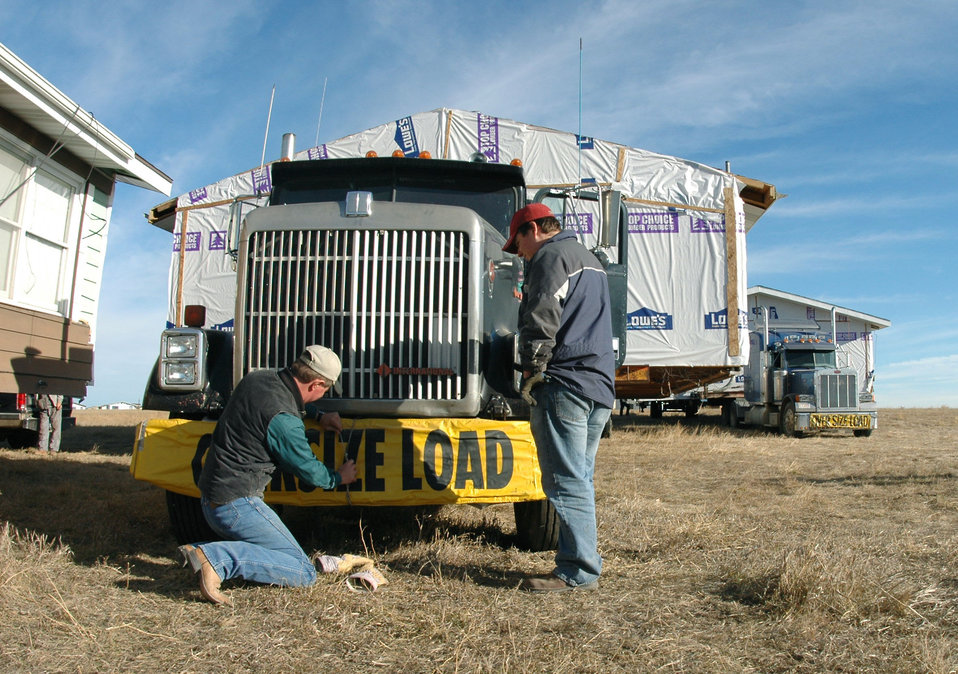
Holidays come early for reservation

ELLSWORTH AIR FORCE BASE, S.D. -- Workers prepare to move housing units Nov. 22 from here to the Rosebud Indian Reservation. They will become new houses for four American Indian families who have been living in condemned quarters.